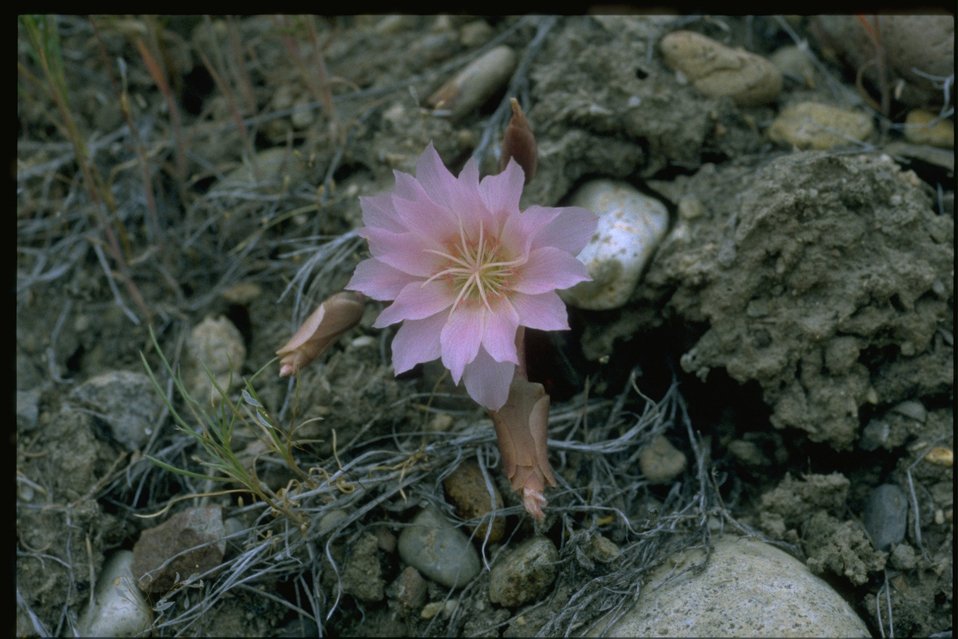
Medium shot of Bitterroot wildflower.